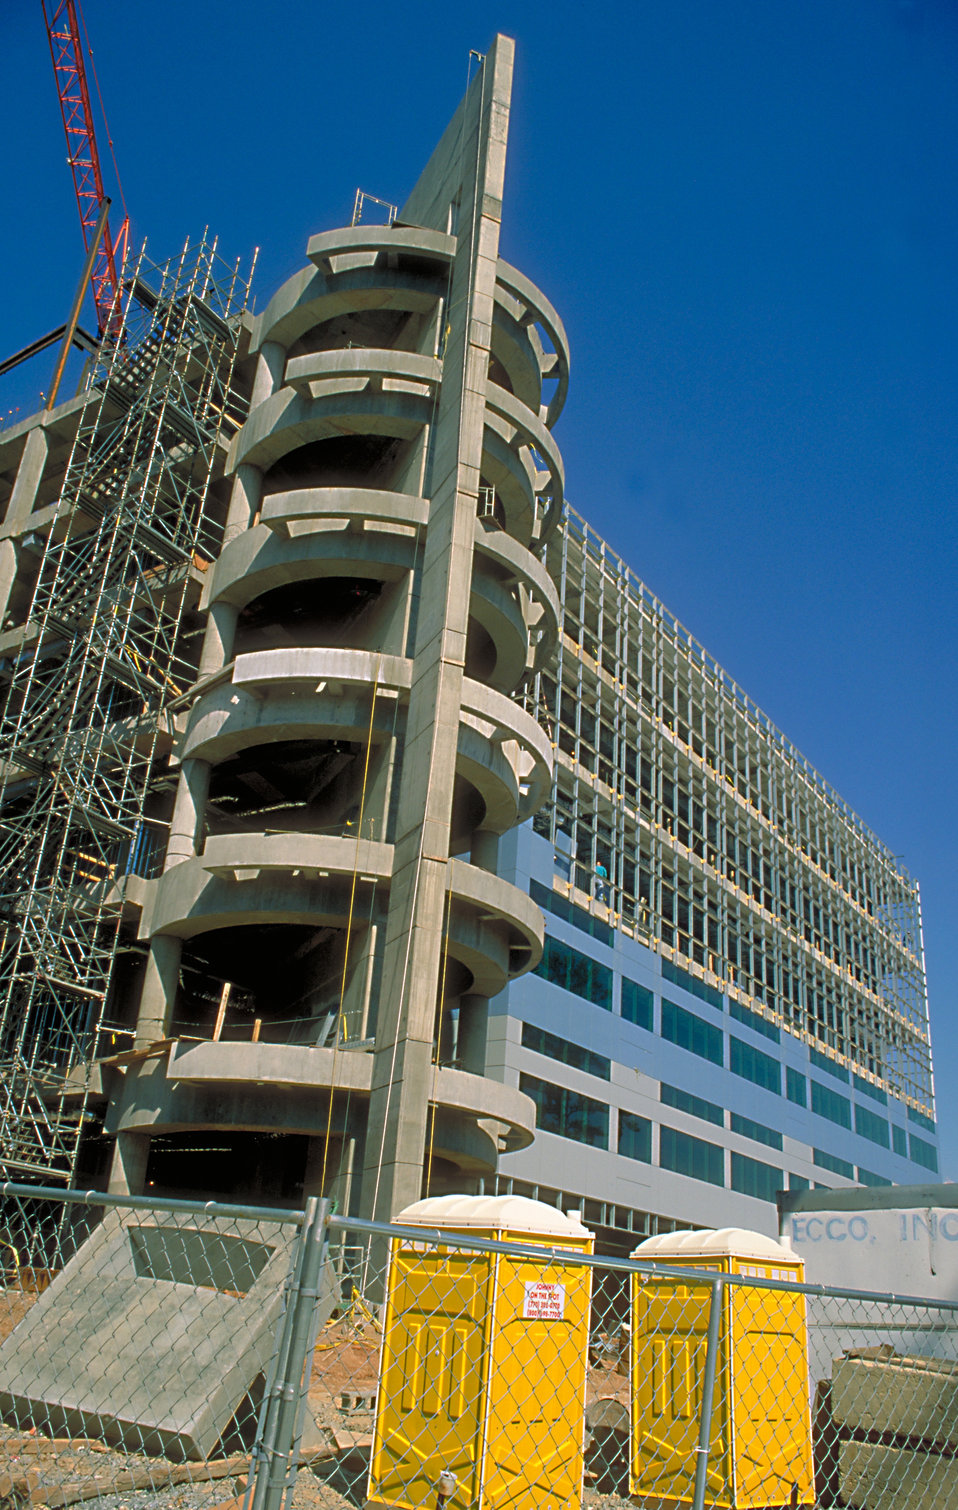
Construction on Building 17, CDC. Portable toilets. March, 1999.